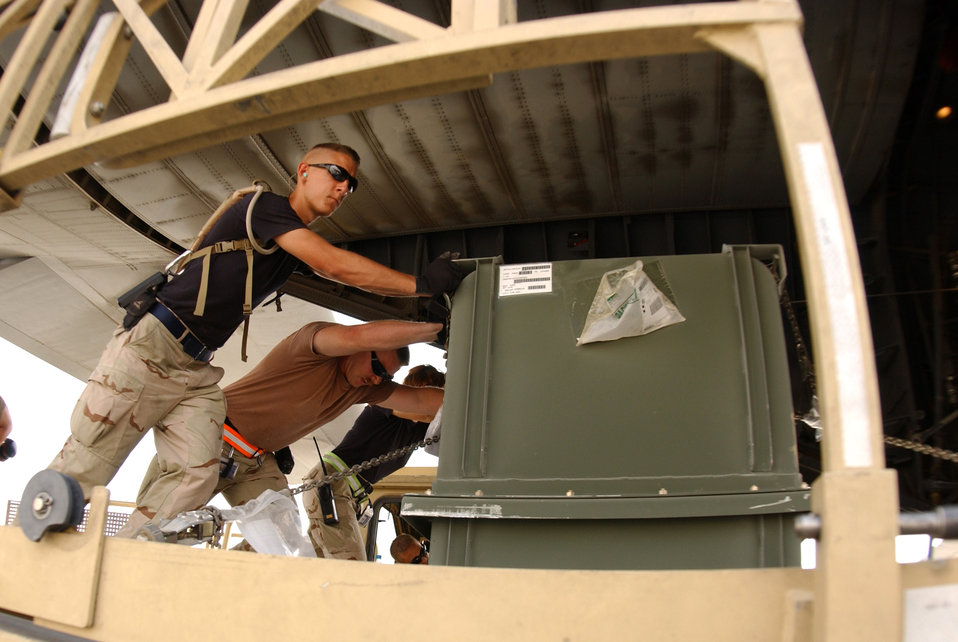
More airborne cargo means fewer convoys

Airman 1st Class Jeff Boutin and fellow aerial porters load a C-130 Hercules at Balad Air Base, Iraq, on Tuesday, July 4. More than 12,000 tons of cargo were moved by the squadron in June.